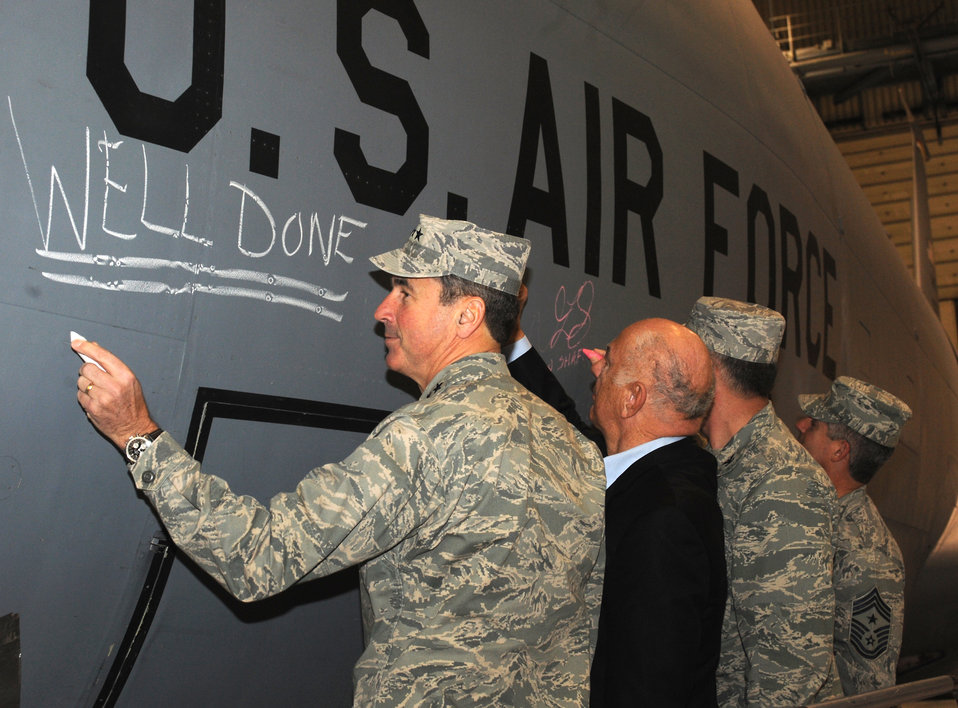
Mission Complete

Gen. Raymond Johns (from left), John Marshall, Col. Don Shaffer and Chief Master Sgt. David Spector sign the last KC-135 Stratotanker stationed at Grand Forks Air Force Base, Dec. 3, 2010, after the conclusion of the mission-complete ceremony. The ceremony was held to recognize the completion of 50 years of Stratotanker flight and maintenance operations on base. Grand Forks AFB is scheduled to receive RQ-4 Global Hawks in the summer of 2011. General Johns is the Air Mobility Command commander. Mr. Marshall is the Grand Forks Air Force Base ambassador. Colonel Shaffer is the 319th Air Refueling Wing commander and Chief Spector is the AMC command chief.